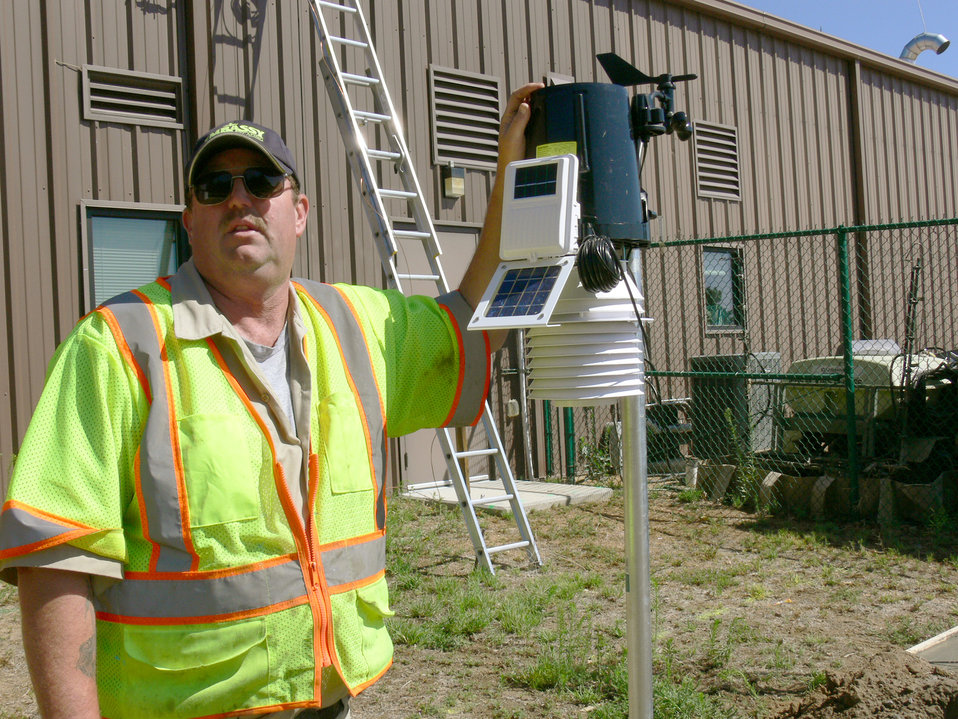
Every drop counts

Rich Paquette explains the newly installed weather system tied directly to a central irrigation system. When there is an eighth of an inch of rain, the weather system tells the irrigation system to shut down. The new system is expected to reduce water used for irrigation at Peterson Air Force Base, Colo., by 50 percent. Mr. Paquette is from Embassy Lawn and Landscape, the head of irrigation at Peterson AFB.